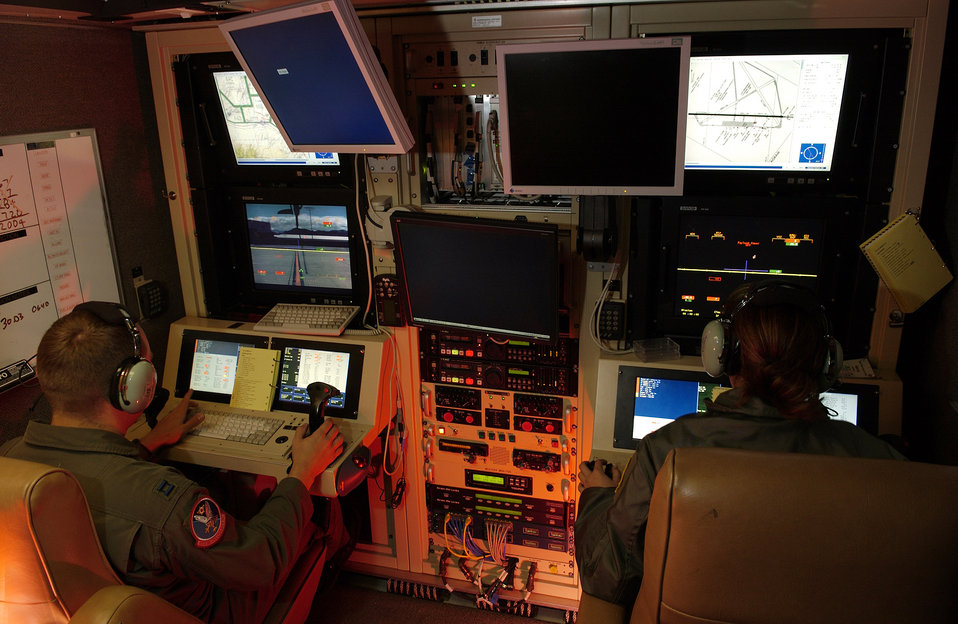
Predator flies unprecedented combat flight hours

INDIAN SPRINGS AUXILIARY FIELD, Nev. -- Student MQ-1 Predator pilot Capt. Andy Beitz and student sensor operator Airman 1st Class Stephanie Barroso fly the Predator during a training scenario. The Predator has flown more than 27,000 hours supporting operations Enduring Freedom and Iraqi Freedom from June 2004 to June 2005.